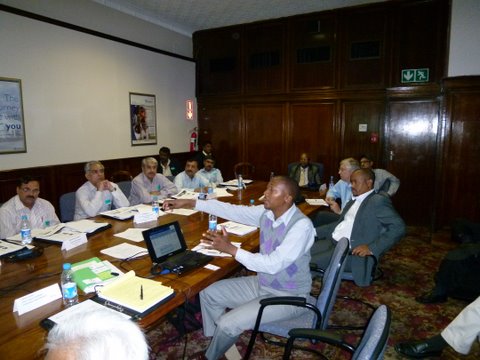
03 Nov - Delegation to SA under Utility Exchange Program

USAID Power Distribution Program in liaison with USEA organized a Utility Exchange Program in Johannesburg and Pretoria, South Africa from November 12- 19, 2011.Twelve delegates were selected from 9 DISCOS of Pakistan. The delegates visited the following number of power companies in South Africa:
1 .Johannesburg City Power
2. Tshwane Energy & Electricity Division
3. Eskom
The main focus of the Program was learning best practices and functions in Engineering Management, Planning and Operations. Such exposure visits will enable the DISCOs participants to support and propose such best practices and technological initiatives to improve utility business in Pakistan.